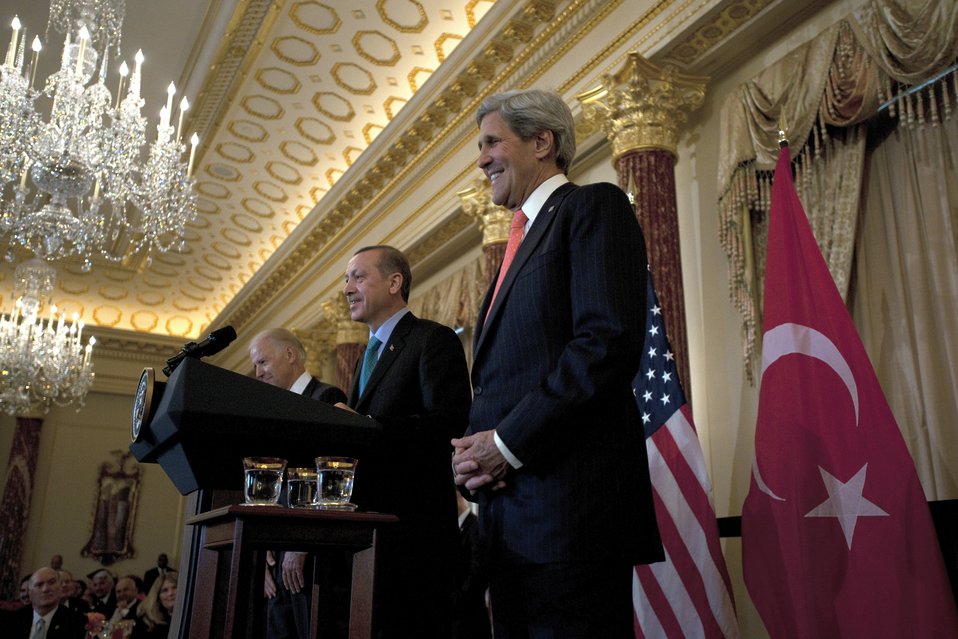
Secretary Kerry Listens as Turkish Prime Minister Erdogan Delivers Remarks

U.S. Secretary of State John Kerry, right, and U.S. Vice President Joseph Biden, left, listen as Turkish Prime Minister Recep Tayyip Erdogan at the U.S. Department of State in Washington, D.C., on May 16, 2013.